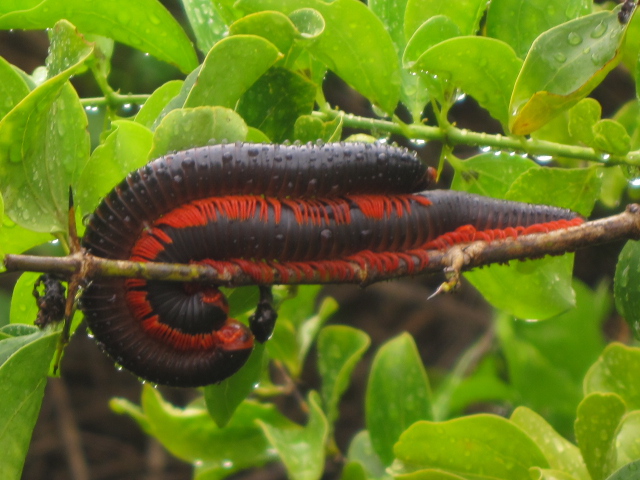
Deutsch: Tausendfüßler 'Malindi-Express' bei der Paarung. Malindi-Express oder der Schönbeinige bei der Paarung; Dar es Salam Januar 2010.